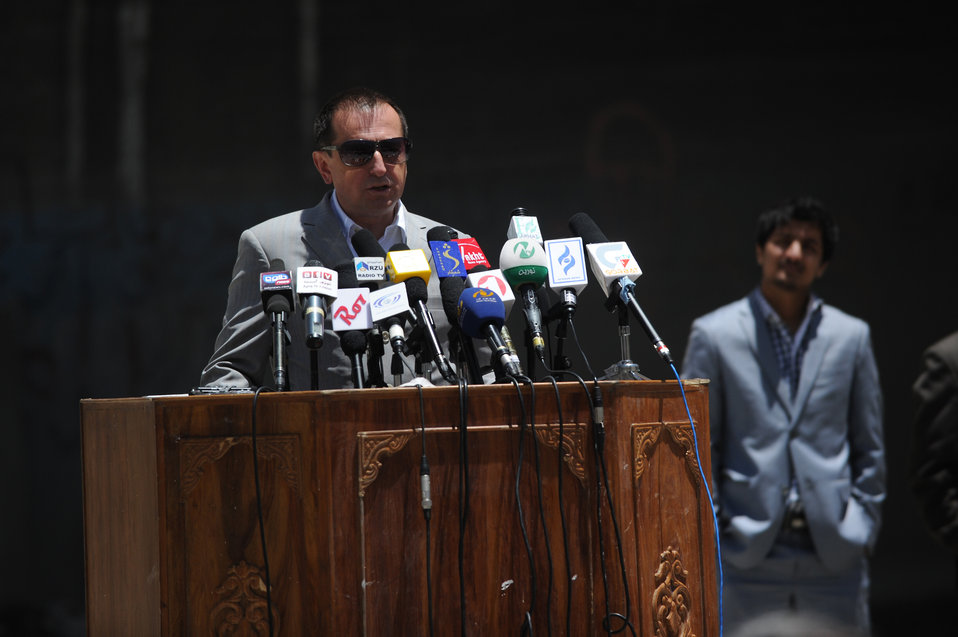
Russian Ambassador Andrey Avetisyan makes remarks during a ceremony to mark the beginning of renovations at the Salang Tunnel on the border of Parwan and Baghlan Provinces, Afghanistan, on Wednesday, June 15, 2011. (S.K.Vemmer/Department of State)